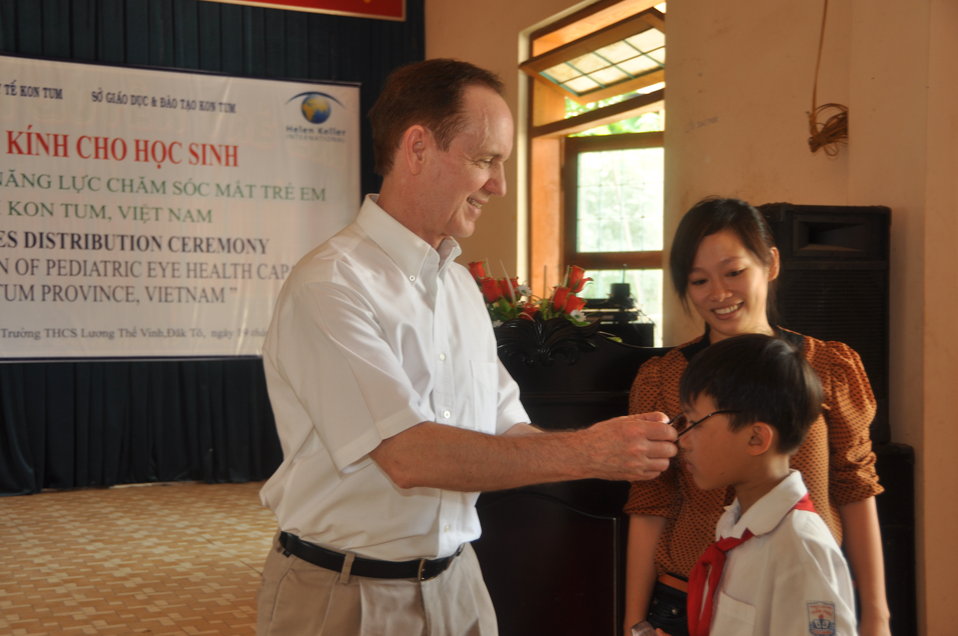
School children in Dak To, Kon Tum Province, receive eyeglasses under a program supported by USAID and partners HKI and World Learning